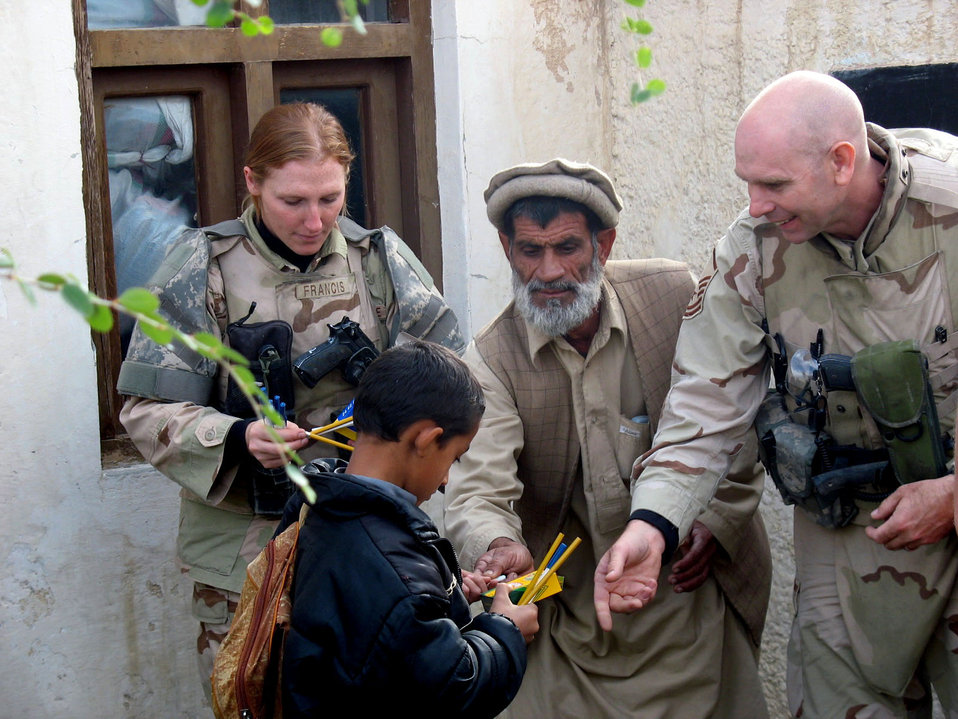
PRT delivers supplies to Afghan schools

An Ishaq Nangial High School teacher in Methar Lam City hands out school supplies to children with the assistance from Master Sgt. Joseph Sawyer and Staff Sgt. Samantha Francis, both with the Methar Lam Provincial Reconstruction Team, during a humanitarian assistance mission Nov. 21 in Methar Lam City, Afghanistan.